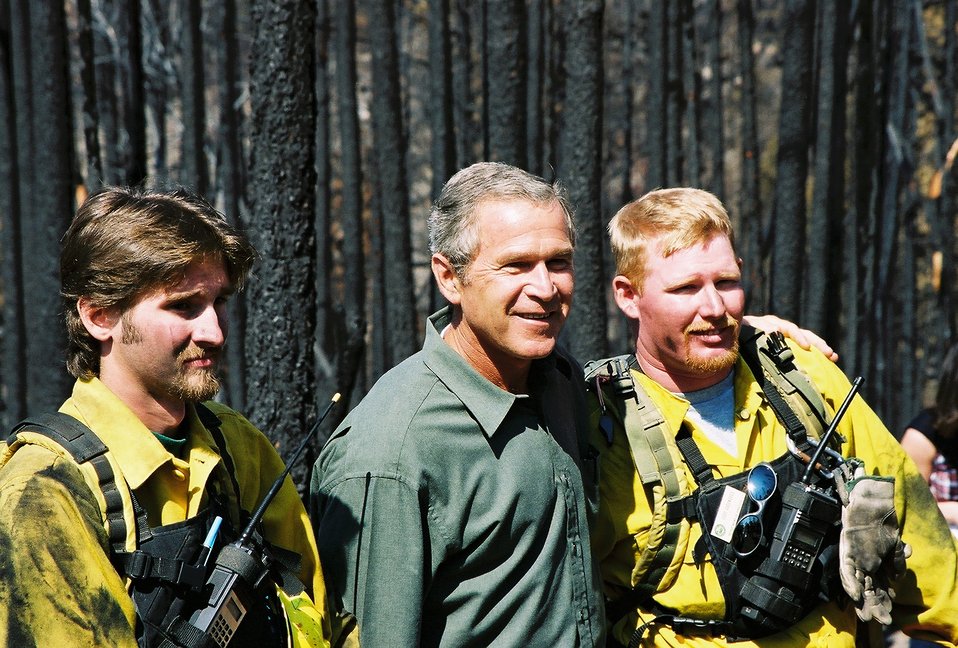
President Bush meets with Jerald Hanson and David Goodnough, two firefighters from the Squires fire. August 22, 2002.